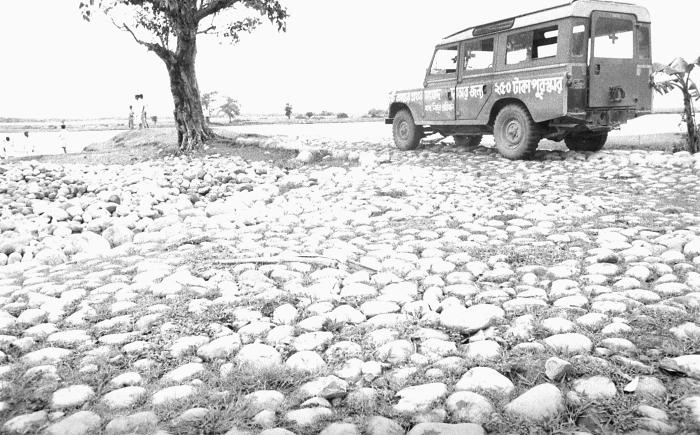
This photograph depicted a smallpox jeep, which had just delivered its smallpox eradication team to a waterway, where they were to embark on the water-bound leg of their journey. This image was part of a series provided by Dr. Stan Foster, and captured by Pierre Claquin, M.D., B.A.C., who at the time was a member of the World Health Organization's Smallpox Eradication Program. It was part of a series photographed by former E.I.S. officer, Stanley O. Foster M.D., M.P.H., and was one of a series entitled 'The Story of One Smallpox Jeep', which depicted the travails faced by the jeep, and its occupants of public health practitioners, as they road through the Bangladesh countryside in an attempt to eradicate smallpox from the country.